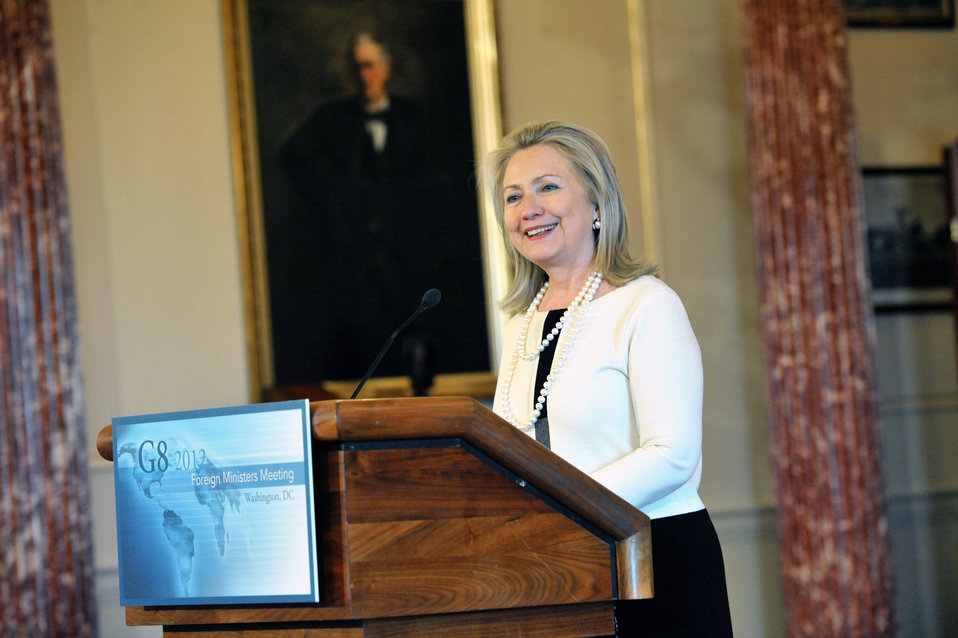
Secretary Clinton Delivers Remarks After the G8 Ministerial

U.S. Secretary of State Hillary Rodham Clinton delivers remarks to the press at the conclusion of the G8 Ministerial at the Department of State in Washington, D.C. on April 12, 2012.